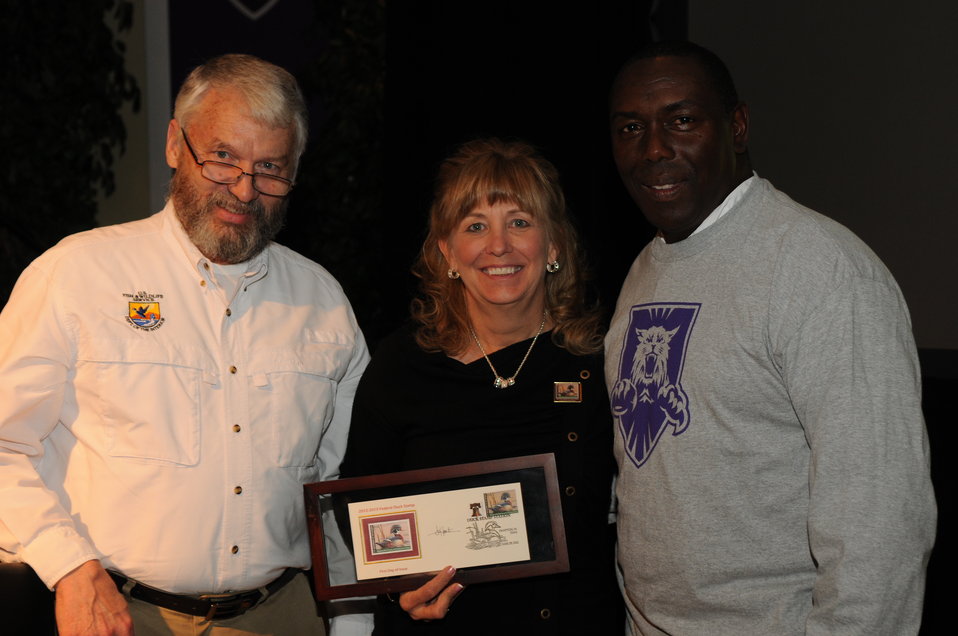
Judge Recognition

The U.S. Fish & Wildlife Service sponsored the 2012 Federal Duck Stamp Art Contest September 28 and 29 in Ogden, Utah, at Weber State University. A panel of five judges was responsible for choosing the art work used to design the 2013-2014 Migratory Bird Hunting and Conservation Stamp.